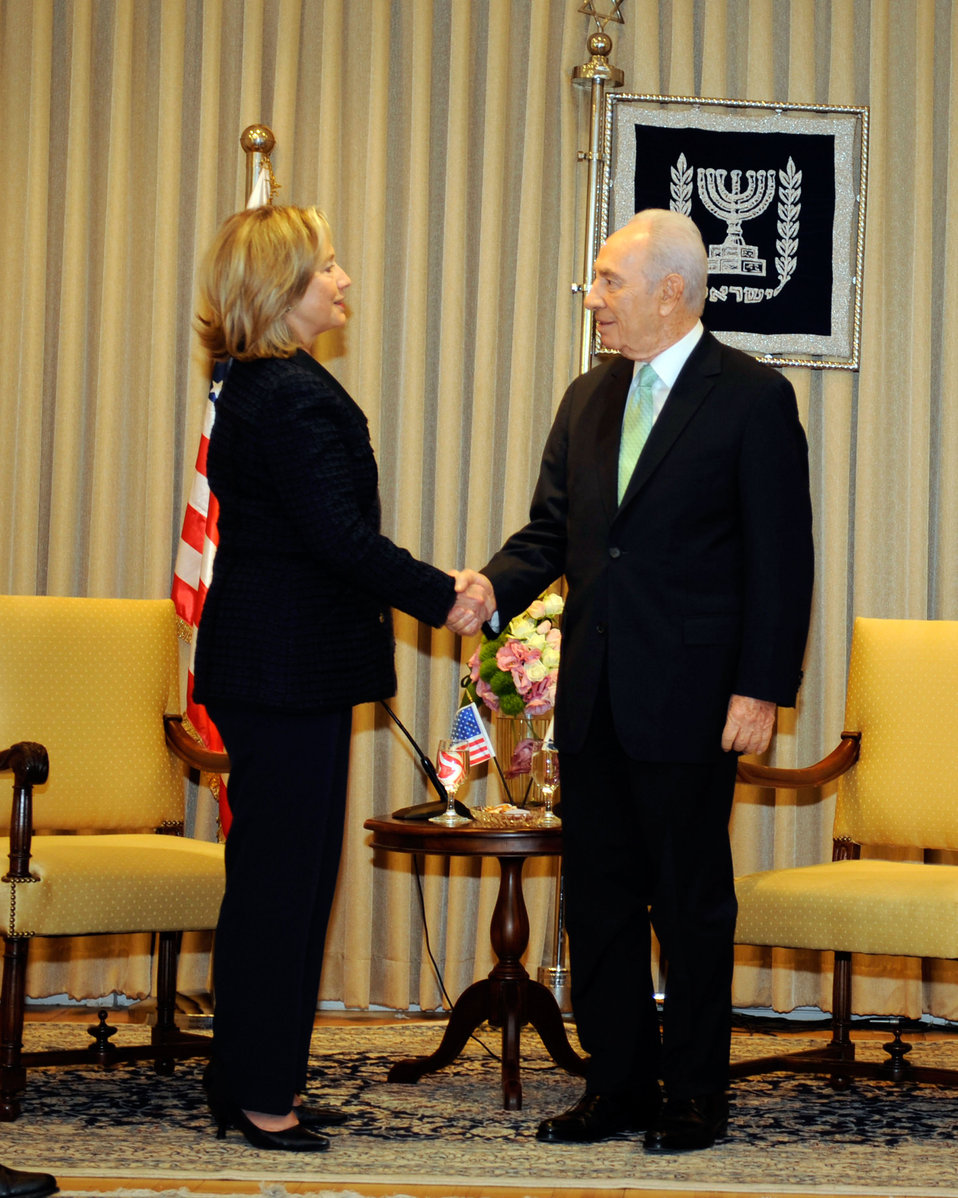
Israeli President Peres Shakes Hands With Secretary Clinton

Israeli President Shimon Peres shakes hands with U.S. Secretary of State Hillary Rodham Clinton at the Presidential Residence in Jerusalem on September 15, 2010.